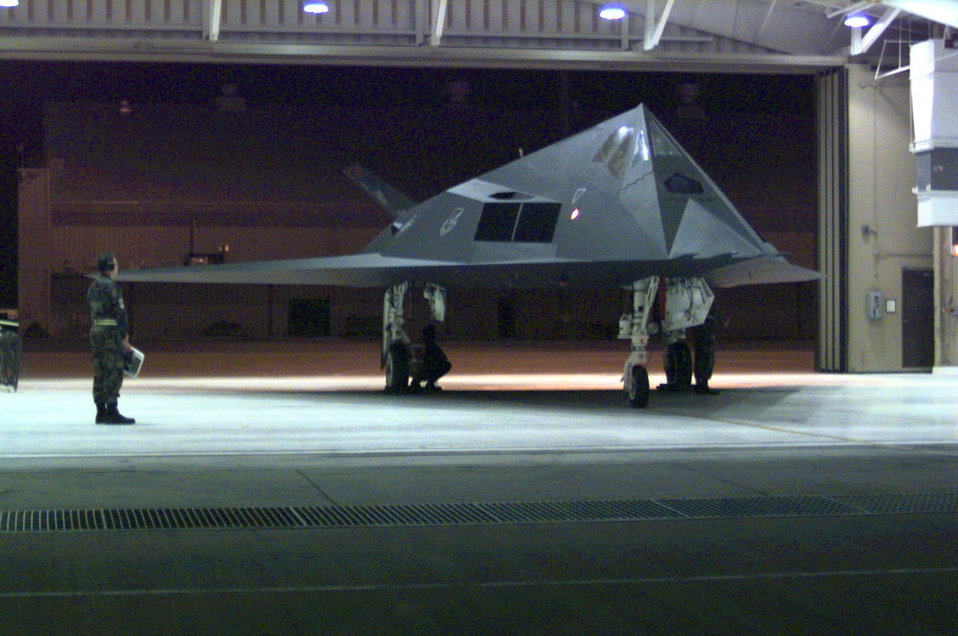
Nighthawk at rest

OPERATION SOUTHERN WATCH -- An F-117 Stealth Fighter from Holloman Air Force Base, N.M., awaits pre-flight preparation for its deployment in support of Operation Southern Watch.